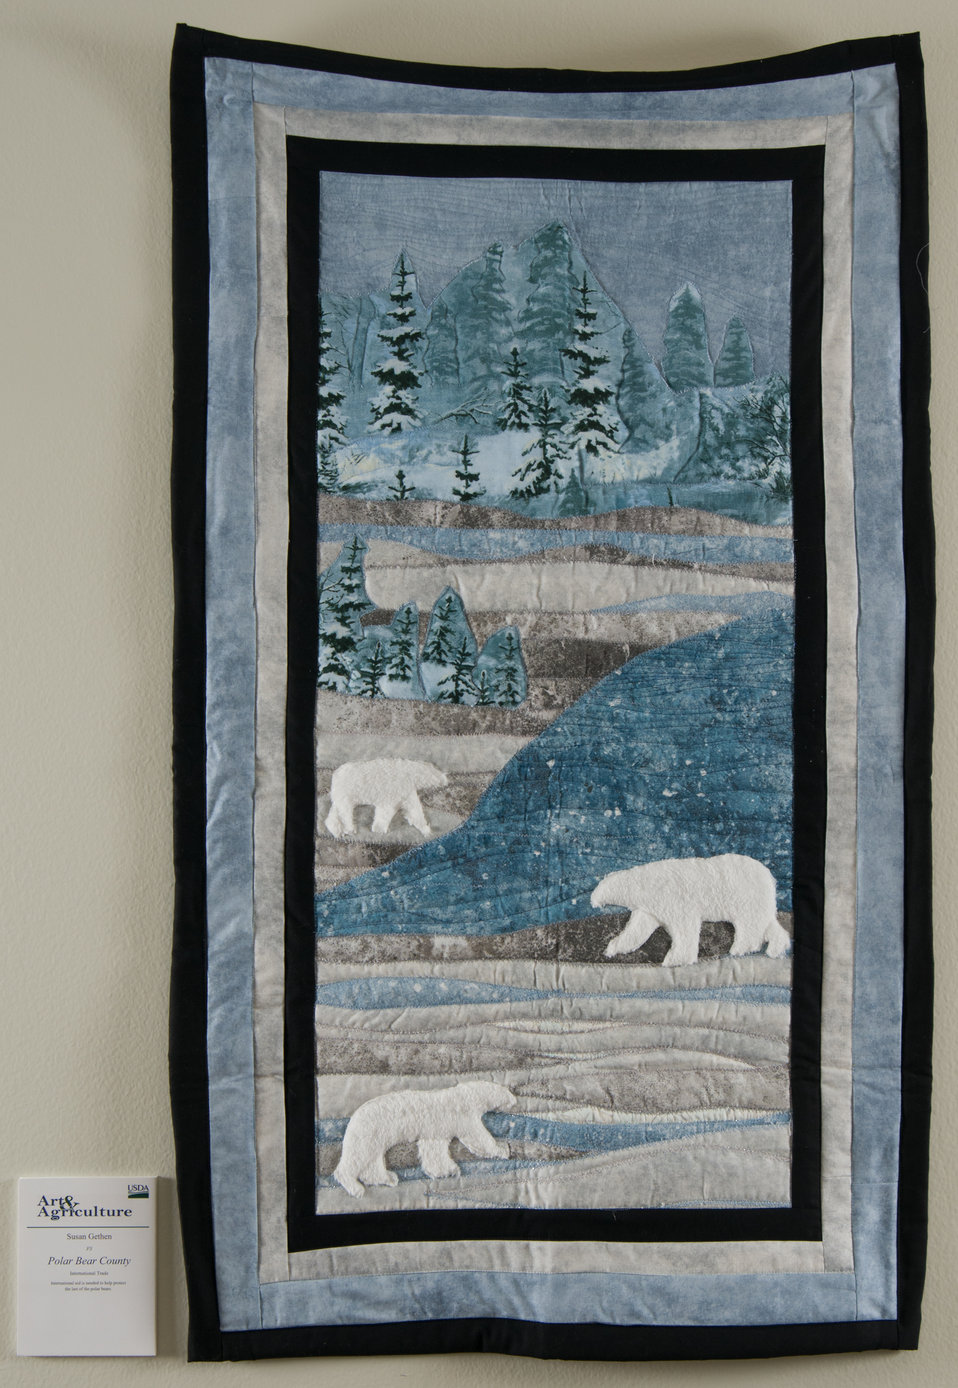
Online Viewer's Choice entries of the 2013 Art & Agriculture, Tuesday, July 9, 2013, in the South Building, Washington, D.C. Themes were expressed by employees from across the department and the contest was open to full-time and part-time USDA employees. Winning artwork will be displayed till the end of the year. U.S. Artistic expression is a creative outlet that is vital for an individual to grow and develop.